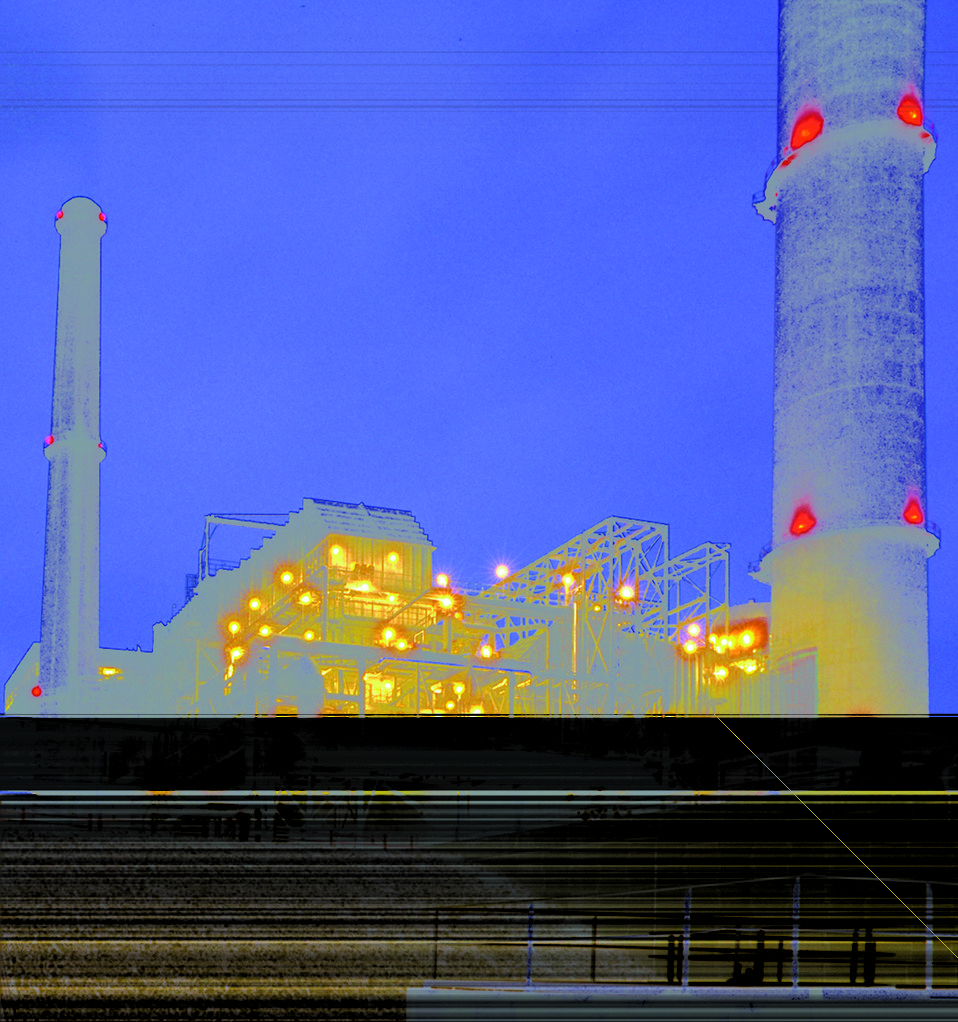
NIGHT VIEW OF THE BAILLY GENERATION STATION IN INDIANA.

THE BAILLY GENERATION STATION IS HOST TO THE ADVANCED FLUE GAS DE-SULFURIZATION (AFGD) PROJECT.